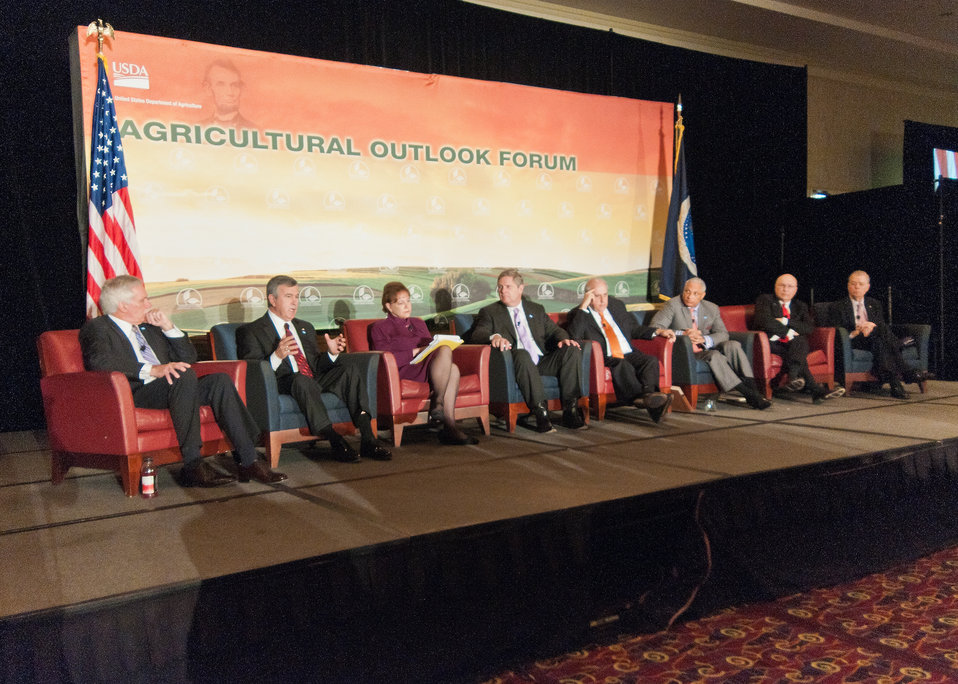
At the 2012 Agricultural Outlook Forum, “Moving Agriculture Forward” in Arlington, VA, held on Thursday, February 23, 2012, 7 former Secretaries of Agriculture sat on the plenary panel “Visions of the Future” hosted by current Agriculture Secretary Tom Vilsack (L to R Governor Ed Schafer (ND), Senator Mike Johanns (NE), Ann Veneman, Agriculture Secretary Tom Vilsack, Congressman Dan Glickman (KS), Congressman Mike Espy (MS), Clayton Yeutter, and John Block).